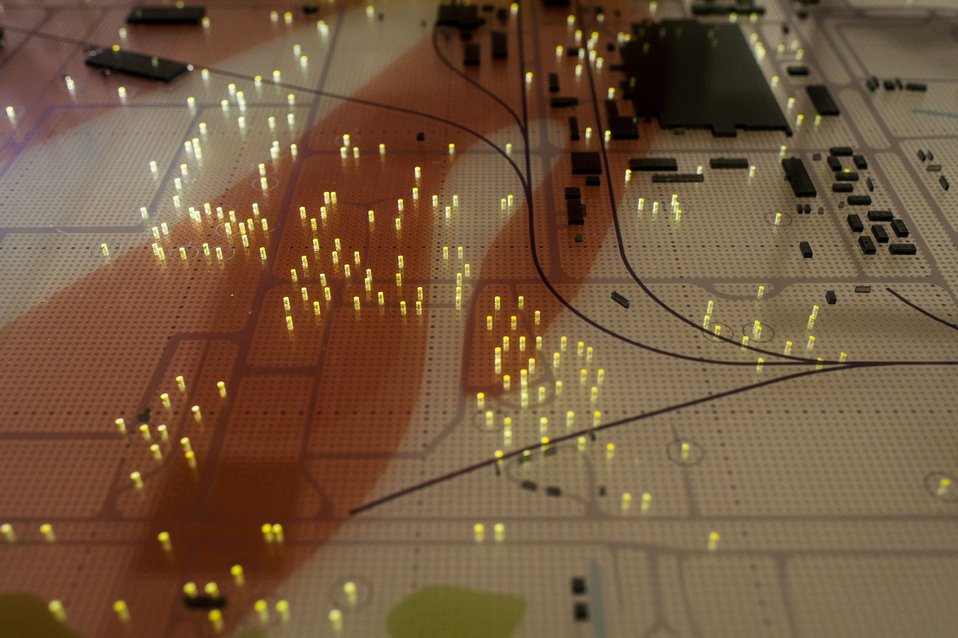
UK Students Imagine DOE’s Paducah Site As Future Technical-Industrial Hub

Yellow lights show groundwater monitoring well and soil boring locations at the Paducah Site.

Over the past year, University of Kentucky students have studied how to preserve, replace, or even build on the more than 3,000 direct and indirect jobs the site currently supports. Future success hinges on interrelated uses such as research and development, education, energy production, manufacturing, and recycling/reclamation, he said.